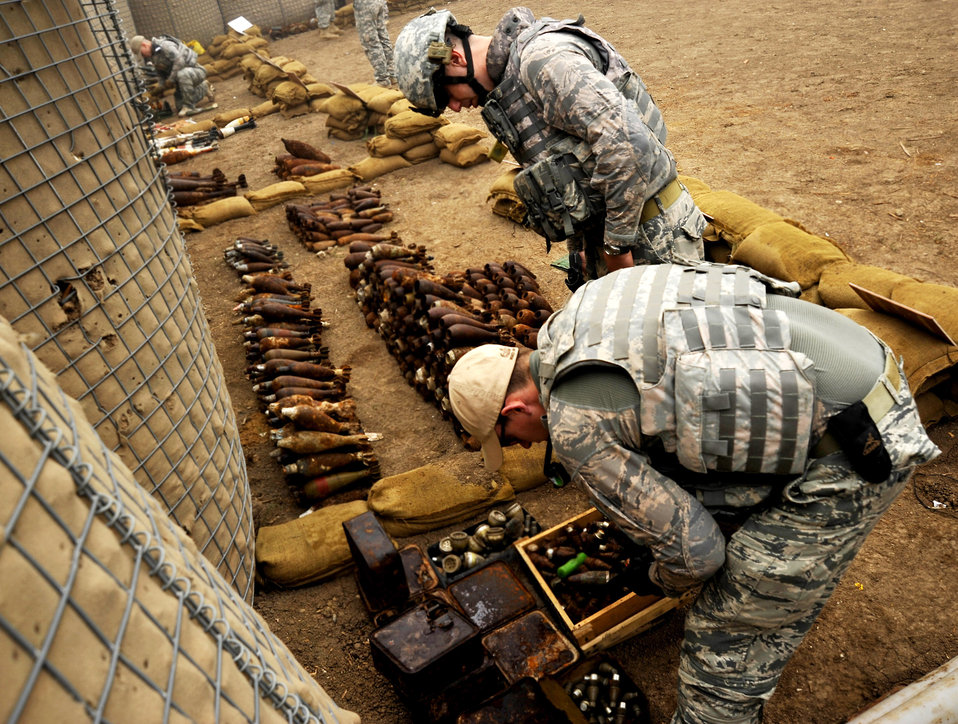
Staff Sgts. Cody Flood and Michael Jamison collect data on explosives in preparation for a controlled denotation Nov. 23, 2009, at Mahmudiyah, Iraq. Sergeants Flood and Jamison are 447th Expeditionary Civil Engineer Squadron explosive ordnance disposal technicians.